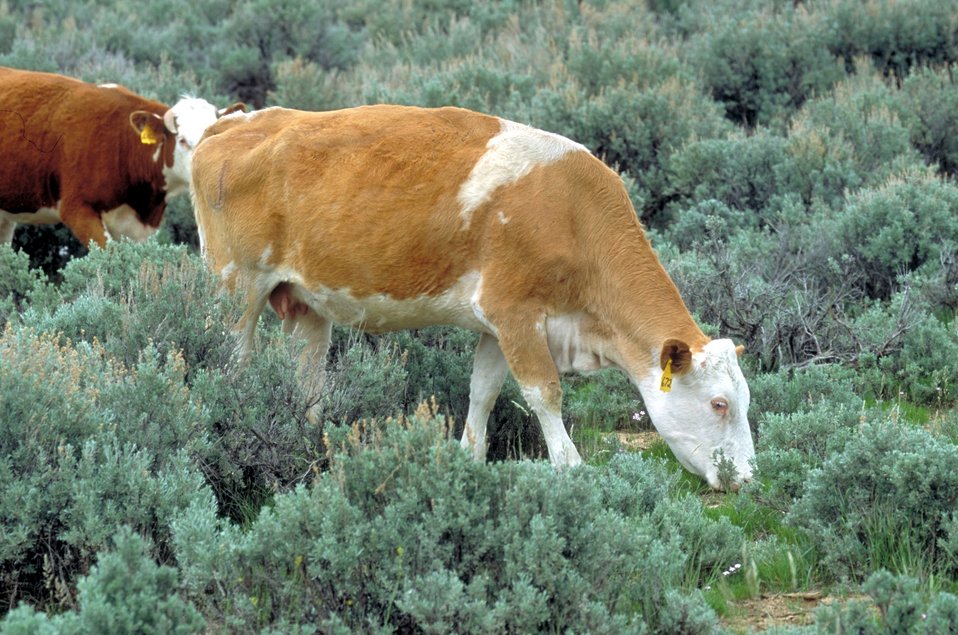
Livestock grazing on BLM lands near Price, Utah.